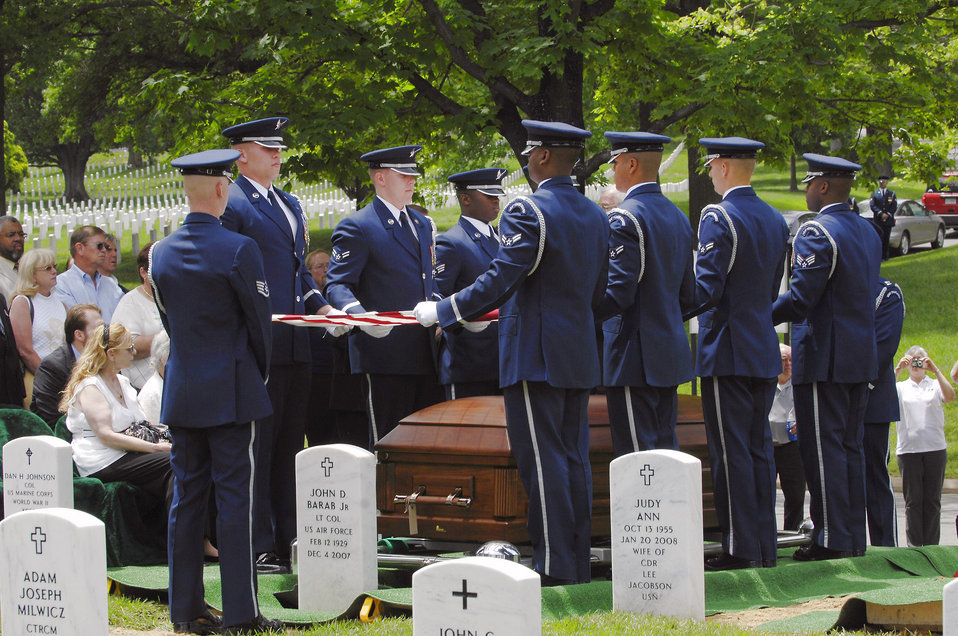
Airman laid to rest after 30 years

An Air Force honor guard folds the American flag over the casket of Senior Master Sgt. James Caniford who was buried May 28 in Arlington National Cemetery in Virginia. Sergeant Caniford, who was missing in action from the Vietnam War and from the 16th Special Operations Squadron, was recently identified.